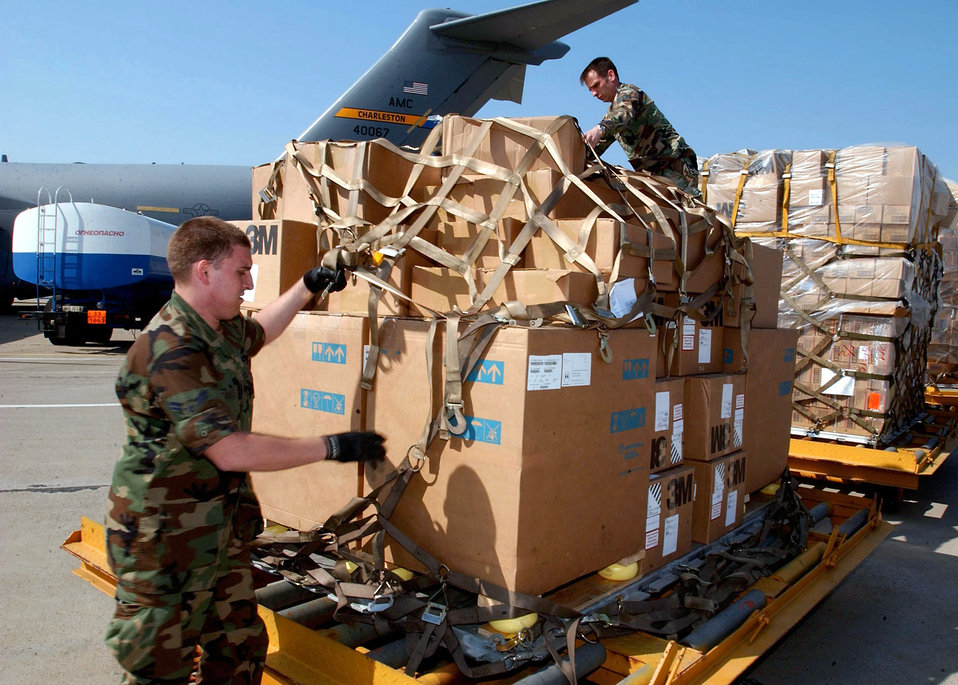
Loading pallets

OPERATION IRAQI FREEDOM -- Airmen deployed to Camp Sarafovo, Bulgaria, load humanitarian cargo onto pallets April 15. The cargo will be loaded onto a C-17 Globemaster III and delivered to the people of Iraq. They airmen are assigned to the 409th Air Expeditionary Group supporting Operation Iraqi Freedom.